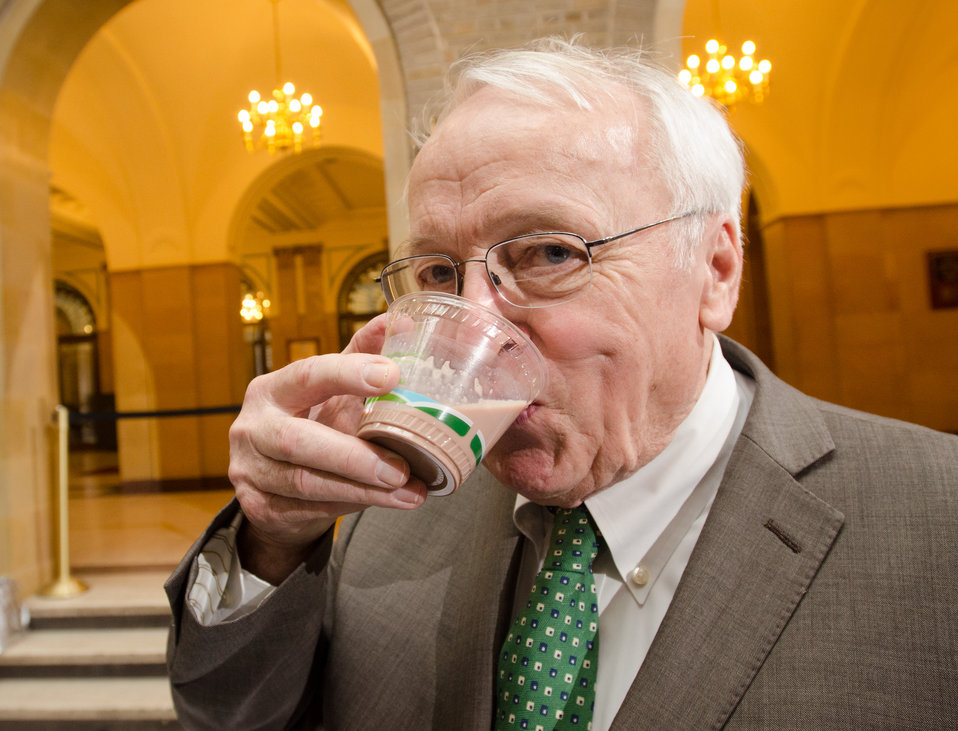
Agriculture Food, Nutrition, and Consumer Services (FNCS) Under Secretary Kevin Concannon tastes the chocolate extended shelf life milk that The Good Cow Company provided from Fair Oaks Farms at a luncheon at the Whitten Building Patio in Washington, D.C. on Tuesday, Feb. 26, 2013.